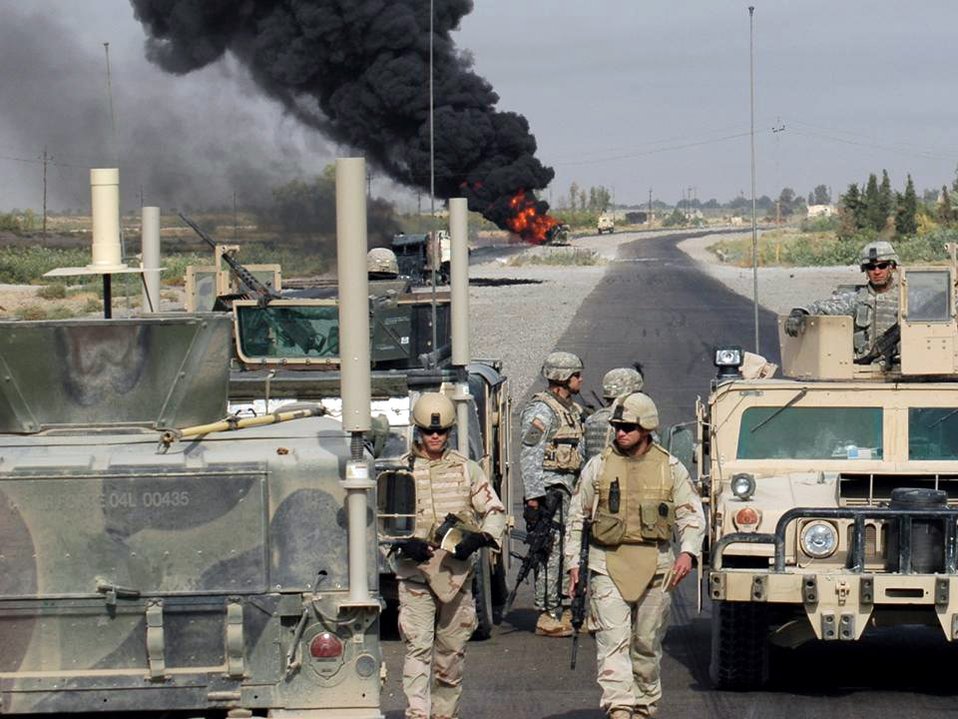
Ordnance Airman awarded Bronze Star for Iraq duty

Waiting for Explosive Ordnance Disposal to confirm the scene is safe, Staff Sgt. Christopher Hawks (left) and Master Sgt. Albert Schneider (right), prepare to collect evidence and obtain pictures. The EOD team from Paliwoda, Iraq, and Sergeant Schneider's Weapons Intelligence Team had just arrived at the scene of two improvised explosive devices detonations targeting civilian vehicles on Main Supply Route Tampa.